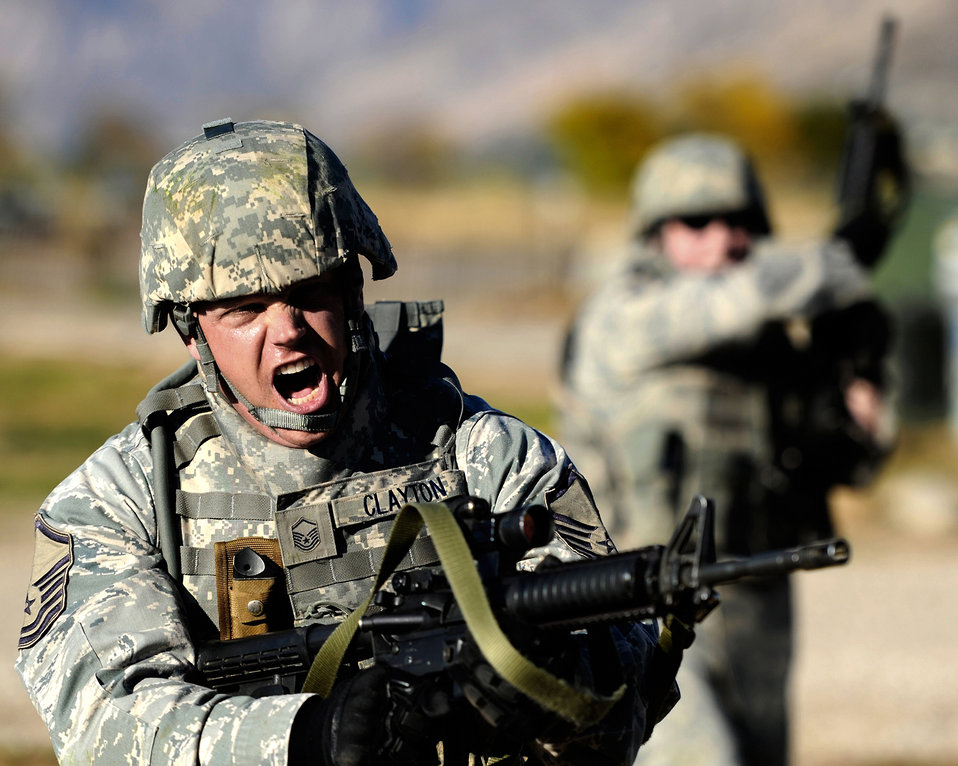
Hey, stop there!

Master Sgt. Douglas Clayton puts his training to use during the 75th Security Forces Squadron Combat Readiness Training course at Hill Air Force Base, Utah, Oct. 18, 2010. The one-week course physically and mentally prepares Airmen for deployments. Sergeant Clayton is the flight chief for the squadron.